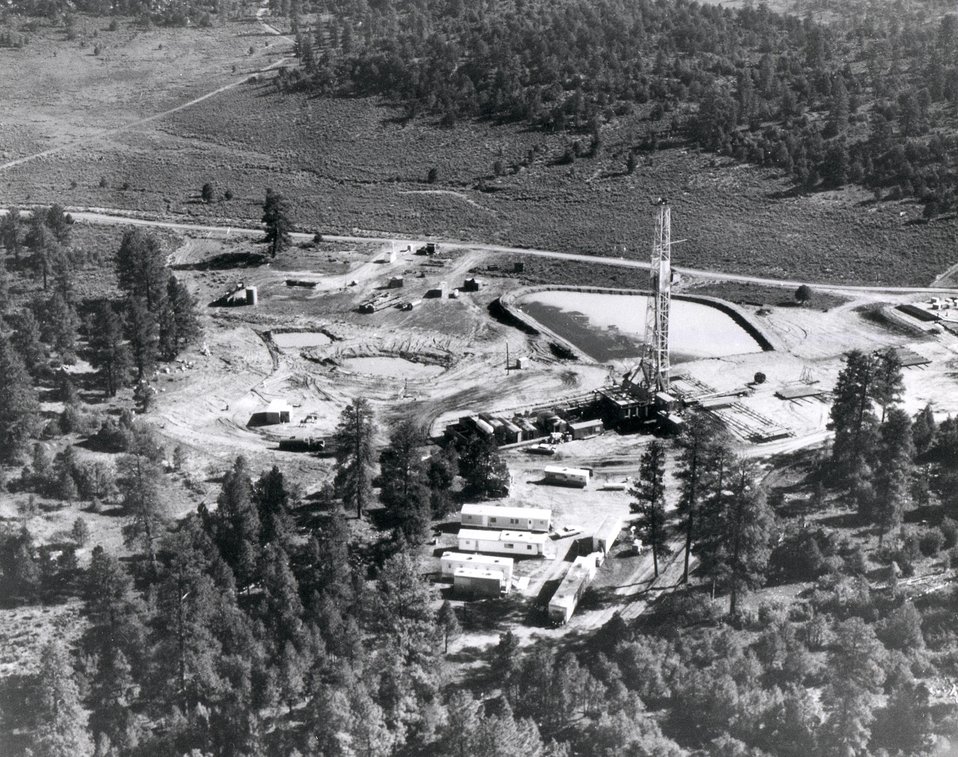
Drill tower at the Gasbuggy site, prior to the detonation of a nuclear explosive deep underground by the AEC in a natural gas simulation on December 10, 1967. Circa 1967.